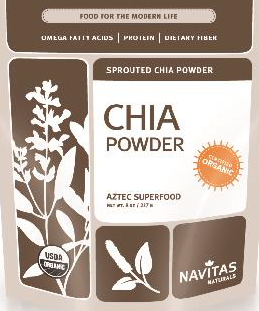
RECALLED – Sprouted Chia Seed Powder Products

June 6, 2014 – Product Recall – Navitas Naturals Expands Voluntary Recall for Organic Sprouted Chia Powder Products.